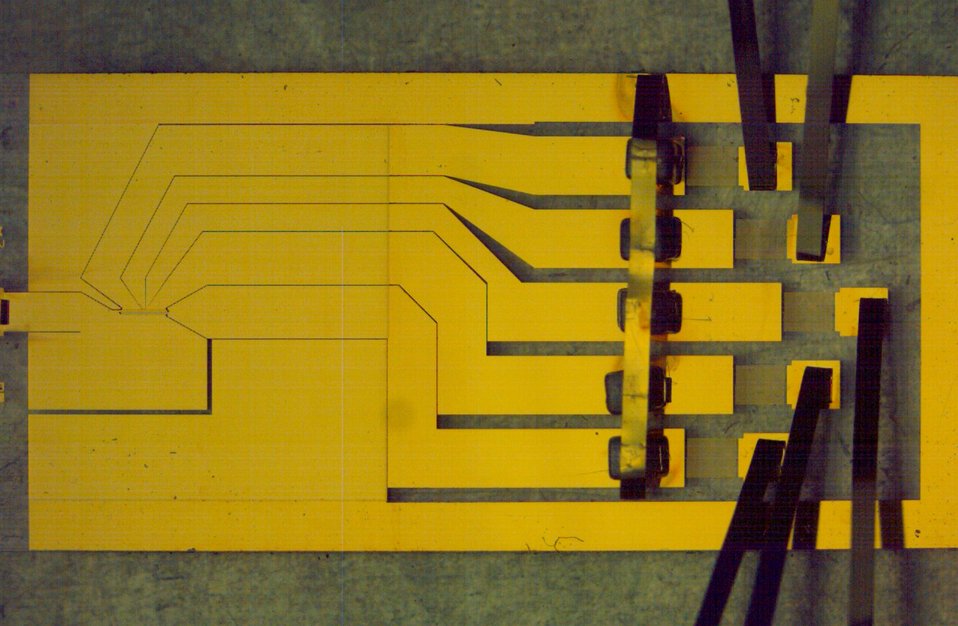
Planar Ion Trap

NIST's novel planar ion trap was designed to be easily mass produced, potentially enabling quantum computers large enough for practical use. The trap uses gold electrodes to confine magnesium ions 40 micrometers above the plane of the electrodes. Laser beams are used to create ions from the metal vapor and then cool them.